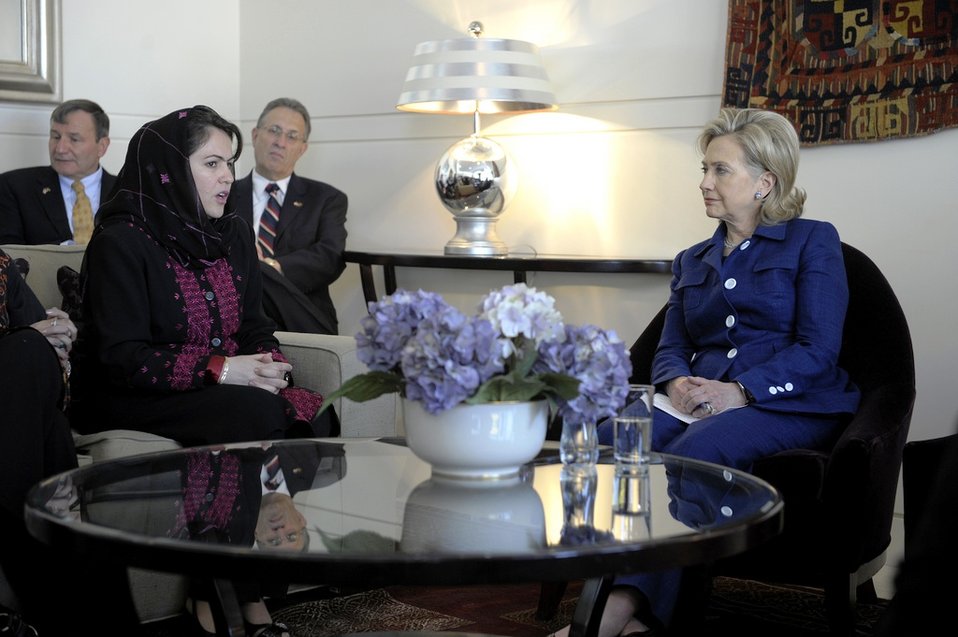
Secretary Clinton Participates in a Women’s Empowerment Event

U.S. Secretary of State Hillary Rodham Clinton participates in a women’s empowerment event hosted by EU High Representative for Foreign Policy Catherine Ashton in Kabul, Afghanistan, on July 20, 2010.